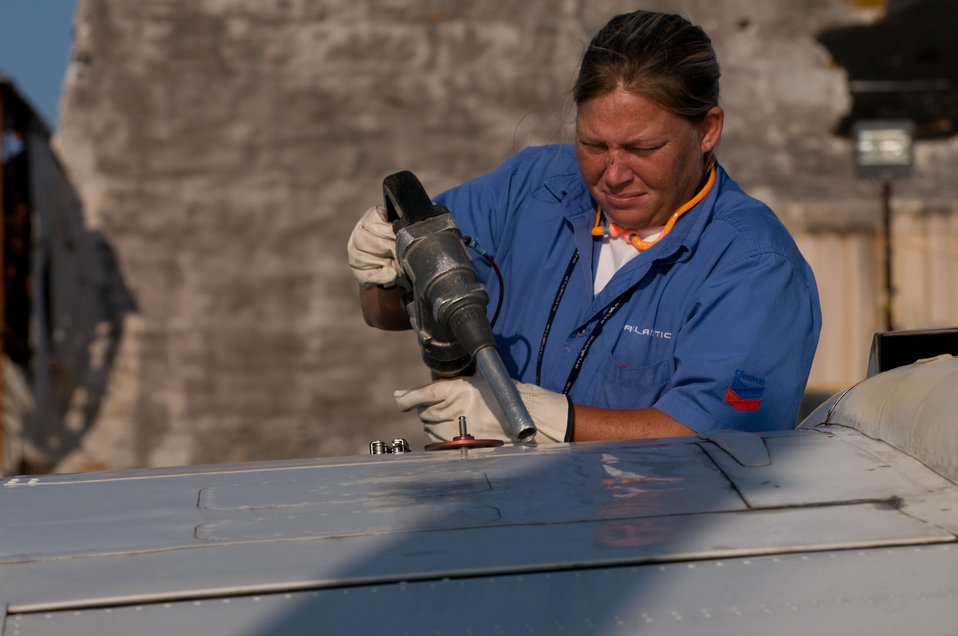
ASPECT plane refueled

May 9, 2010. A worker refuels the EPA's ASPECT aircraft, used to collect environmental data in response to the BP oil spill.